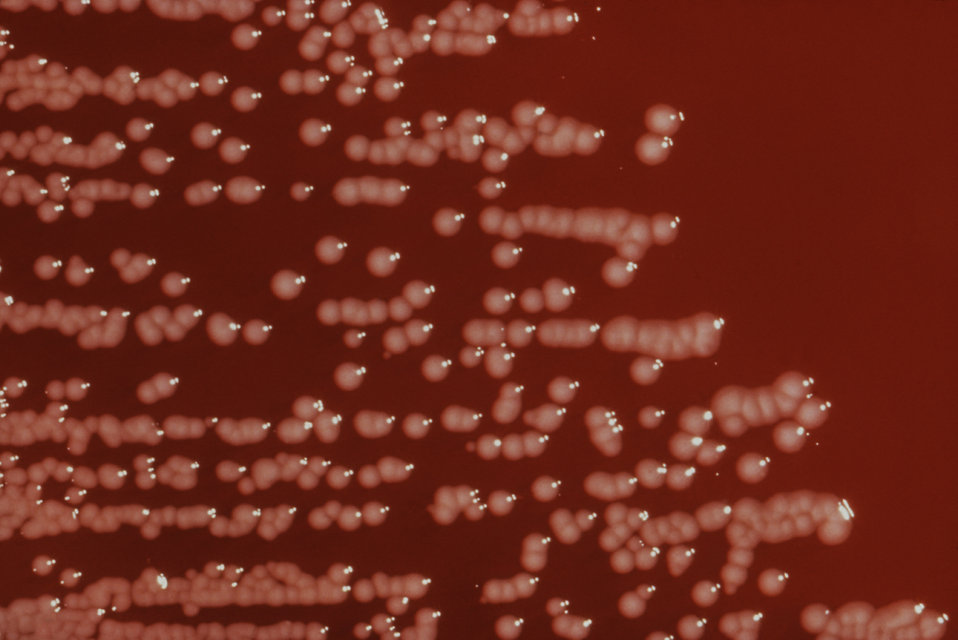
This photograph depicts the colonial growth pattern displayed by Yersinia enterocolitica bacteria growing on a blood agar plate (BAP) medium.